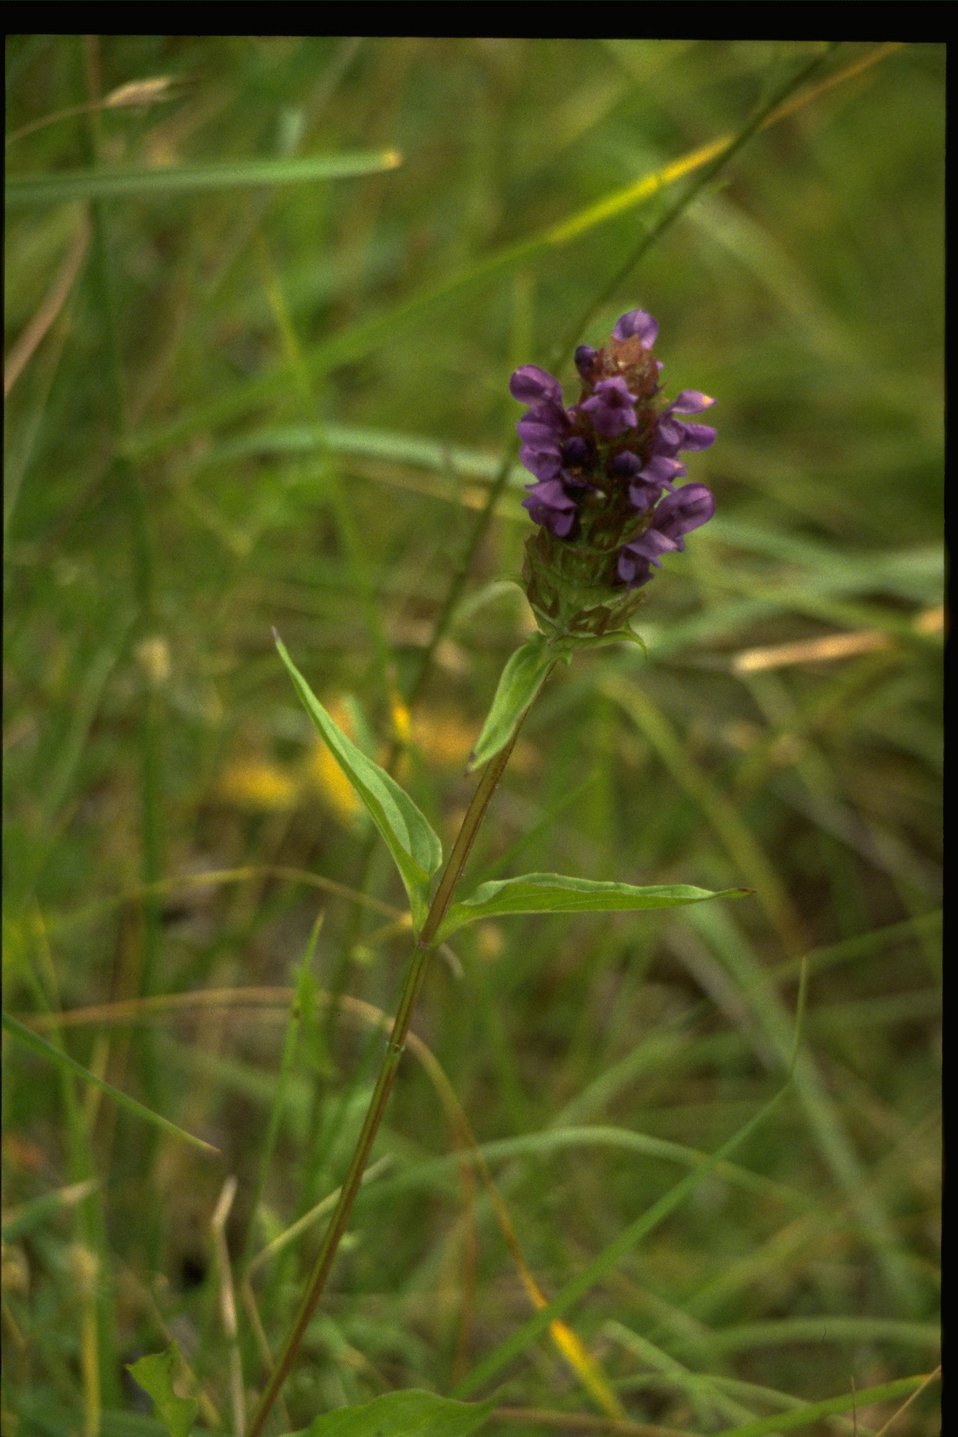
Medium shot of Prunella vulgaris.